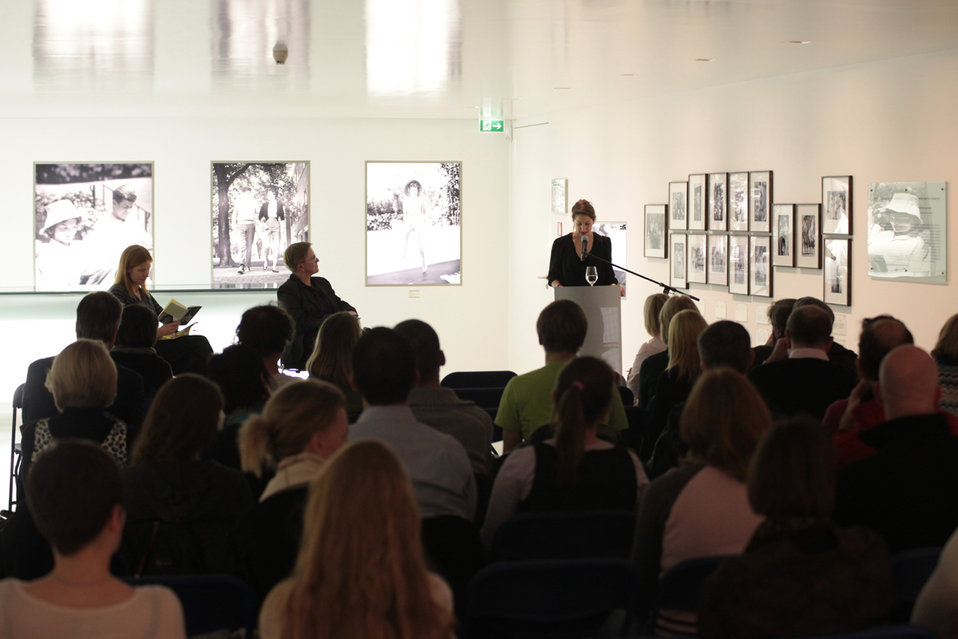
Author Maile Meloy Reads From Her Book 'A Family Daughter'

Author Maile Meloy reads from her book, “A Family Daughter,” at the Kennedy Museum Berlin during a U.S. Embassy Literature Series event in Berlin, Germany, on November 19, 2010.